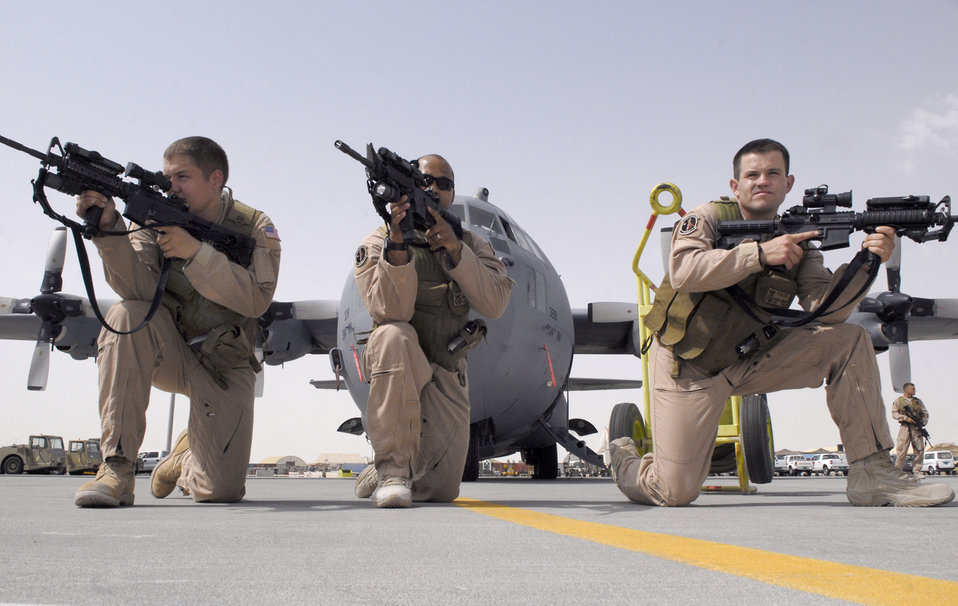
Elite team provides security for airlift assets in unsecure locations

Airman 1st Class Corey Davis, Staff Sgt. James Booker and Airman 1st Class Robert Hansen post in the front of a C-130 Hercules during a training exercise June 18 at an air base in Southwest Asia. Airman Davis is a 379th Expeditionary Security Forces Squadron fly-away security team member. Sergeant Booker is a 379th ESFS FAST leader. Airman Hansen is a 379th ESFS FAST member.